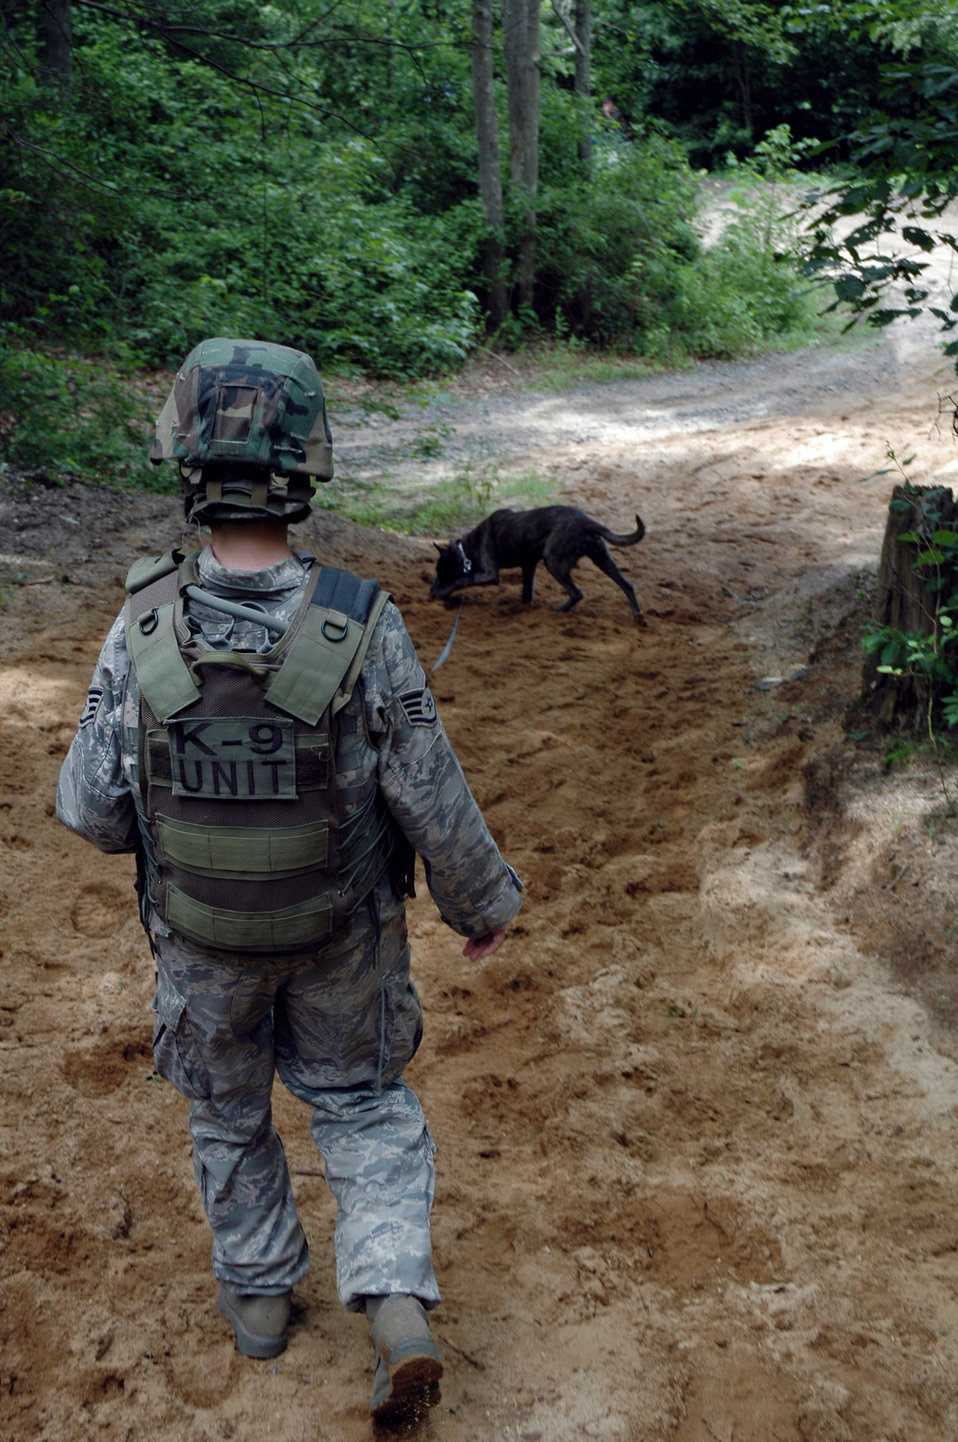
Teaching K-9 detection tactics

Staff Sgt. Kristyne Feldman and her military working dog, Berry, practice detection techniques during training in the Air Force Phoenix Warrior Training Course July 10 at Fort Dix, N.J. Phoenix Warrior is taught by members of the Air Force Expeditionary Center's Expeditionary Operations School and the 421st Combat Training Squadron. Sergeant Feldman is from Royal Air Force Lakenheath, England.